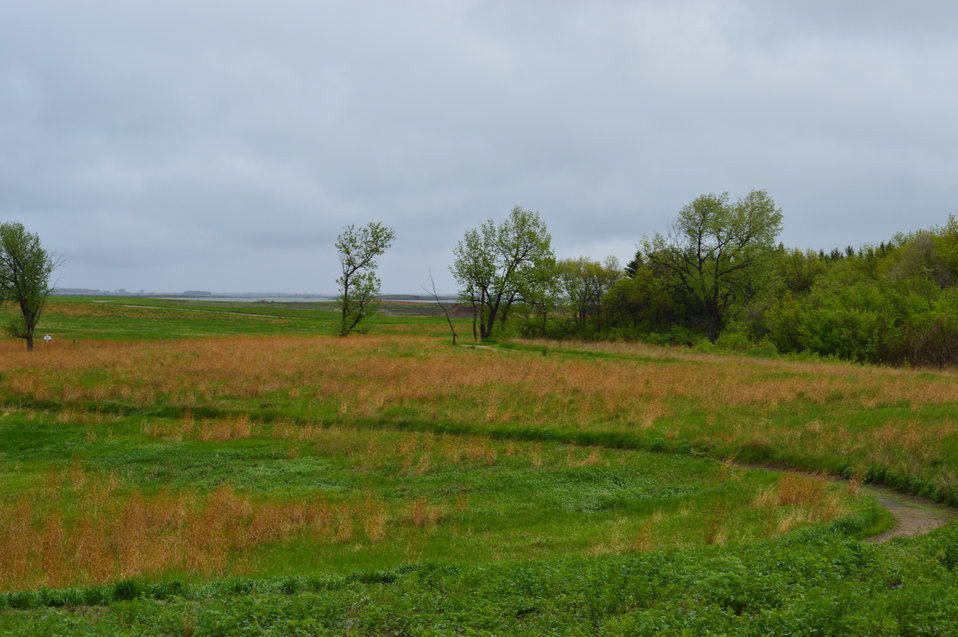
Landscape behind Audubon NWR visitor center

Scenery and wildlife and Audubon National Wildlife Refuge in North Dakota.